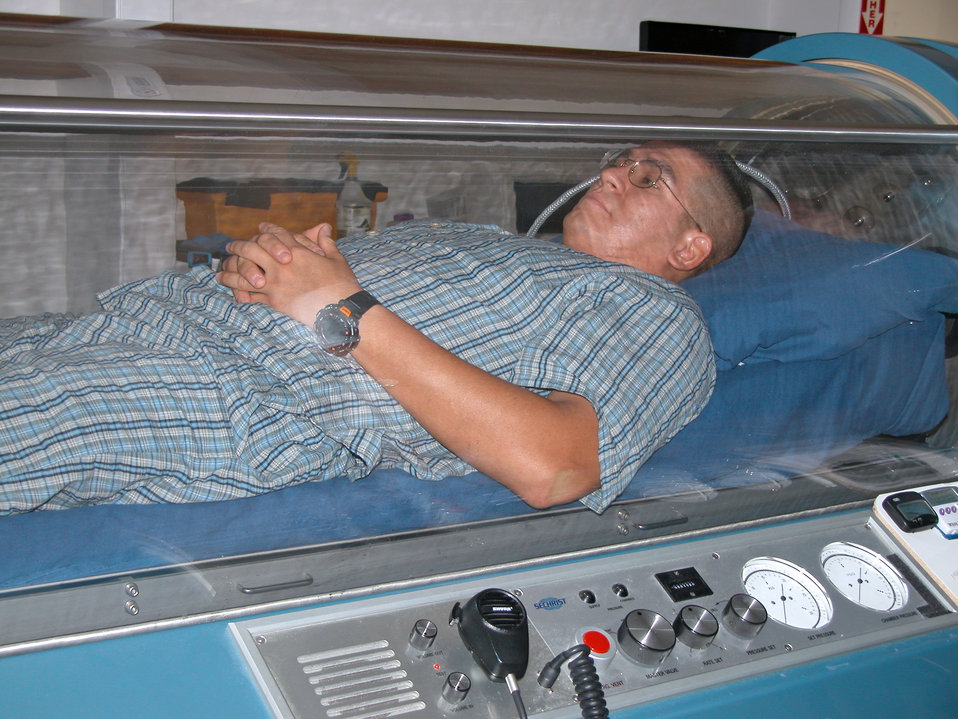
Re-enlistment marks milestone for accident victim

EGLIN AIR FORCE BASE, Fla. -- Tech. Sgt. Hector Barrios receives hyperbaric-oxygen therapy in September 2003 to treat a foot injury he received while deployed supporting Operation Iraqi Freedom. Sergeant Barrios faced an 18-month struggle of amputation, reconstruction and infections before he gained medical clearance to remain in the Air Force. Sergeant Barrios is a dog handler with the 96th Security Forces Squadron here.